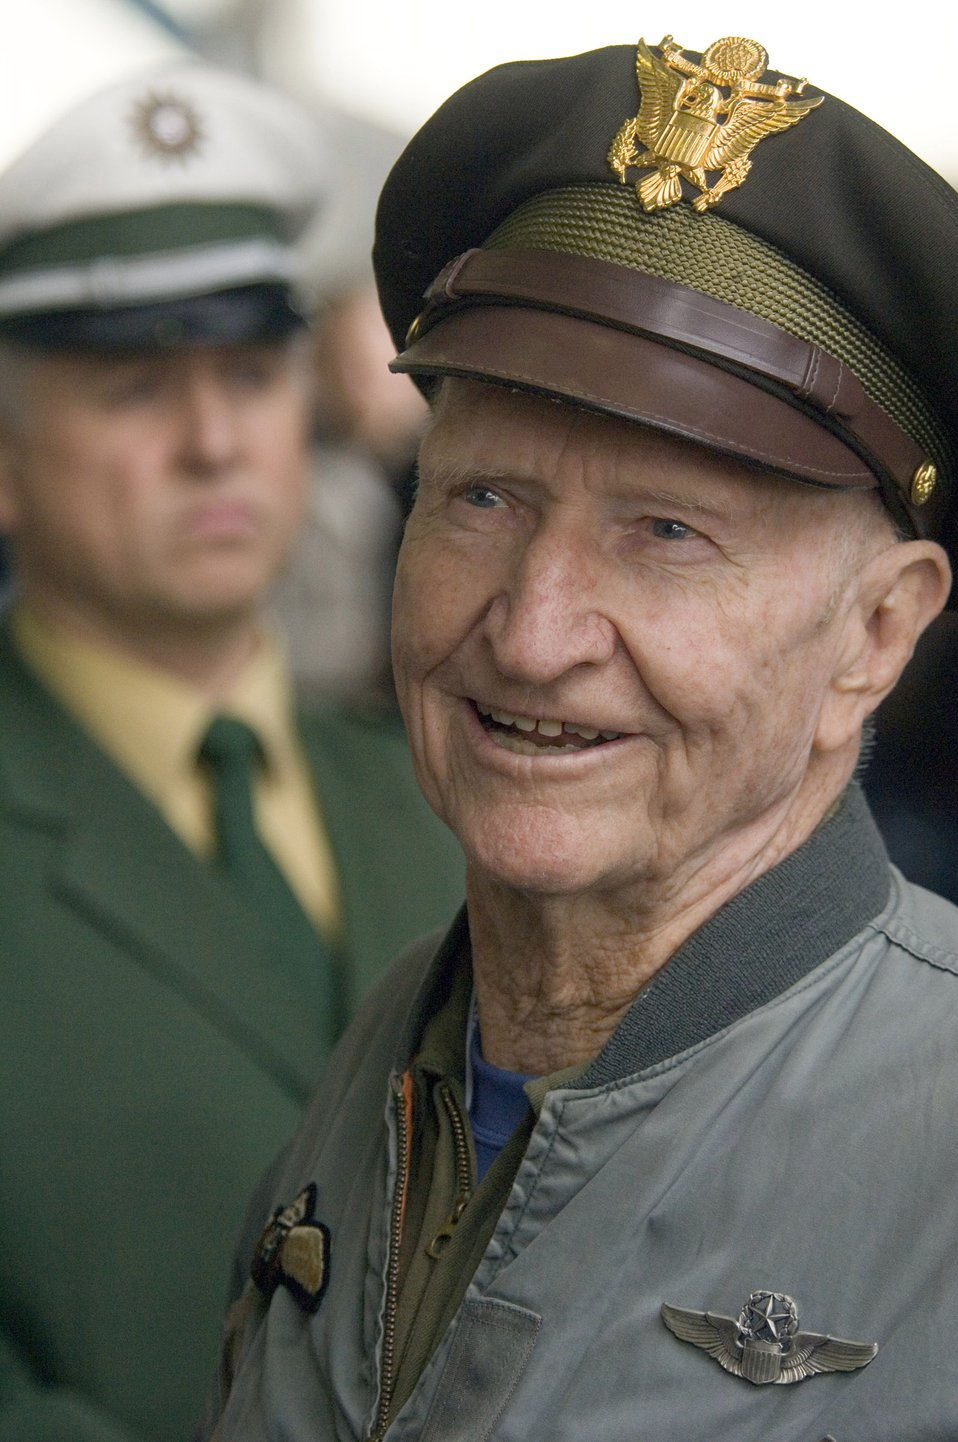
Airlift honored

RHEIN-MAIN AIR BASE, Germany -- Retired Lt. Col. Gail Halvorsen, the famed